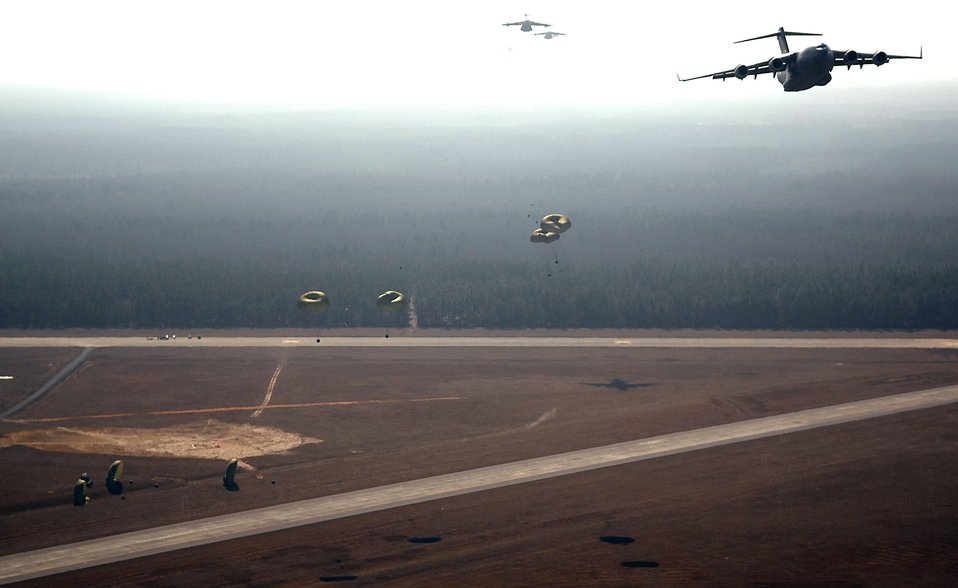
Show of force

C-17 Globemaster IIIs from the 437th and 315th airlift wings drop cargo at a remote airfield during a strategic brigade airdrop exercise involving a 13-ship formation Dec. 18 from Charleston Air Force Base, S.C. C-17s must be able to meet the Army's goal of airdropping a brigade's worth of troops and equipment (about 3,250 Soldiers and 3,450 tons of equipment). Charleston AFB aircraft currently account for half of the Air Force strategic brigade airdrop requirement.